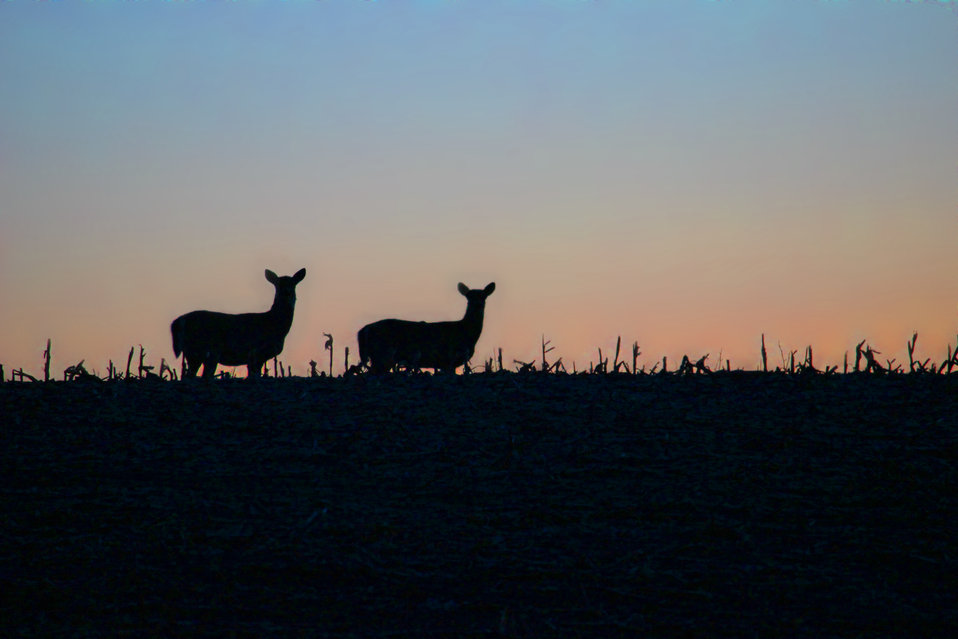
White-tailed Silhouettes

White-tailed Deer against a pre-dawn sky in McIntosh County, North Dakota.